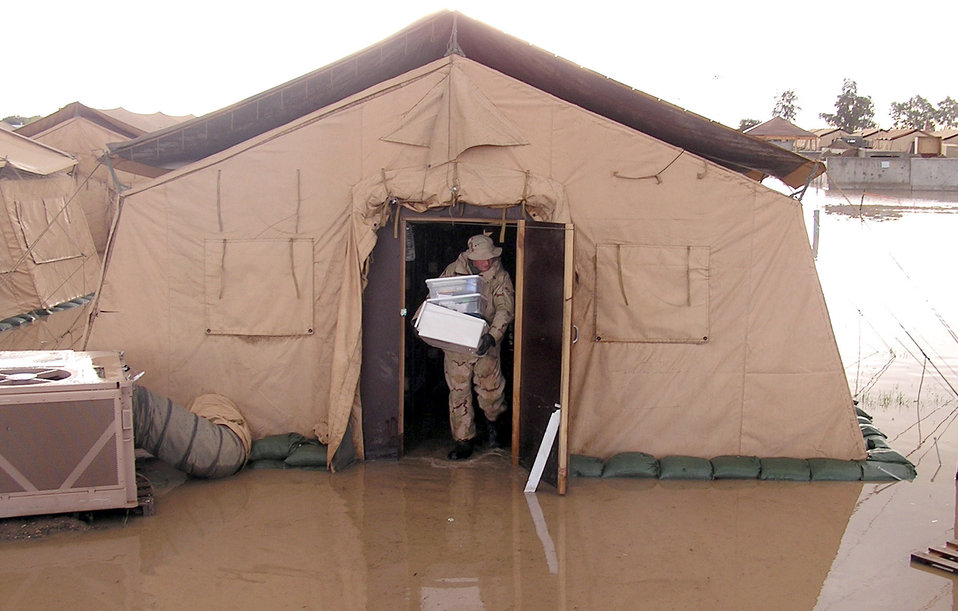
Water world

KIRKUK AIR BASE, Iraq -- An airman removes items from a flooded tent here Jan. 13. The base was hit by nearly 2 inches of rain overnight leaving many areas of the base, including tents for airmen and soldiers, deluged by water.